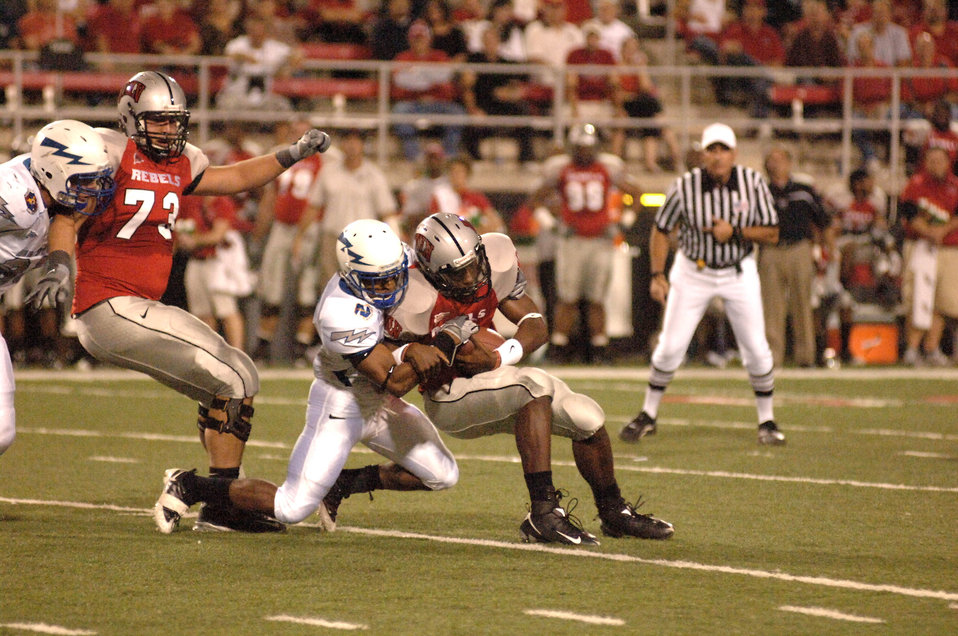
Football: Falcons win thriller in desert 29-28

U.S. Air Force Academy cornerback Reggie Rembert sacks University of Nevada, Las Vegas quarterback Omar Clayton. The resulting 9-yard loss pushed UNLV to fourth and 16 and forced a punt on UNLV?s first possession of the game. The Falcons won 29-28 and improved to 5-2 on the season and 3-1 in the Mountain West Conference.